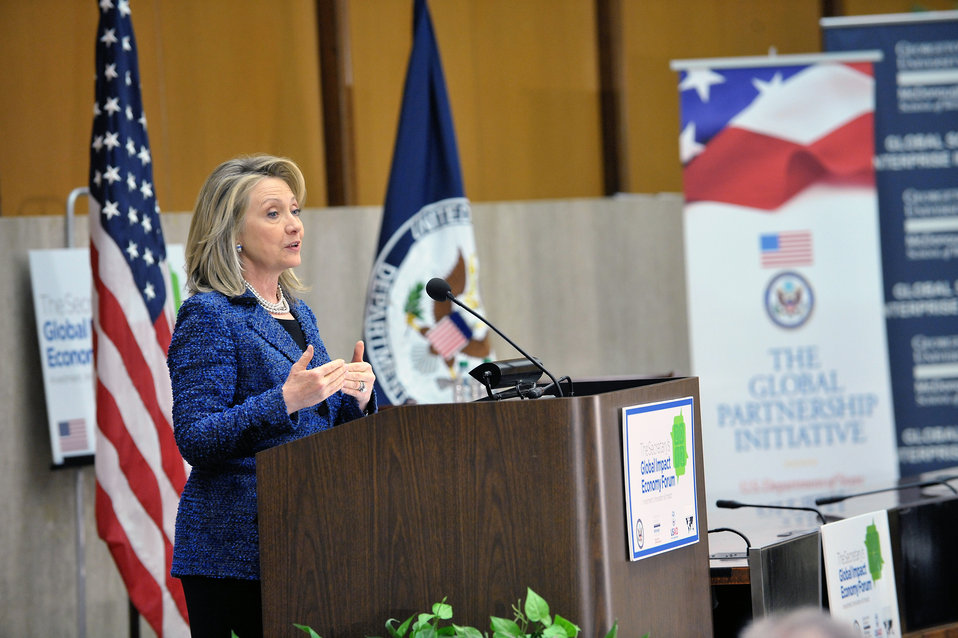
Secretary Clinton Delivers Remarks

U.S. Secretary of State Hillary Rodham Clinton delivers remarks at the first-ever Global Impact Economy Forum at the U.S. Department of State in Washington, D.C., on April 26, 2012.